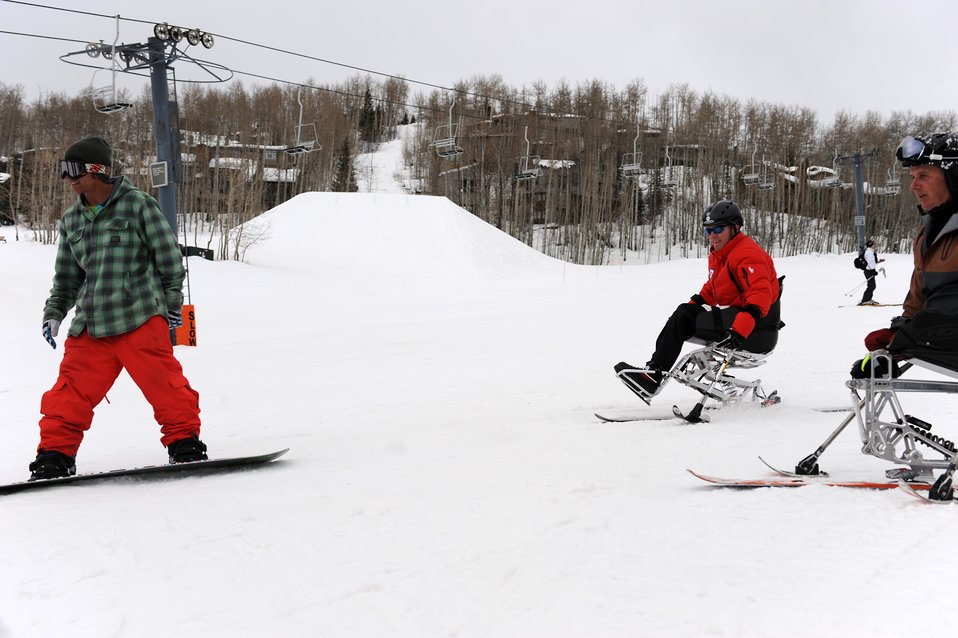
Assistant VA secretary, U.S. Olympians join veterans on ski slopes

Veterans Sean Halsted and Jim Martinson ski with Andy Finch March 31, 2010, during the 24th National Disabled American Veterans Winter Sports Clinic in Snowmass Village, Colo. Mr. Finch is an Olympian snowboarder. Mr. Halsted and Mr. Martinson are U.S. Paralympians. The event is sponsored by the Department of Veterans Affairs and Disabled American Veterans.